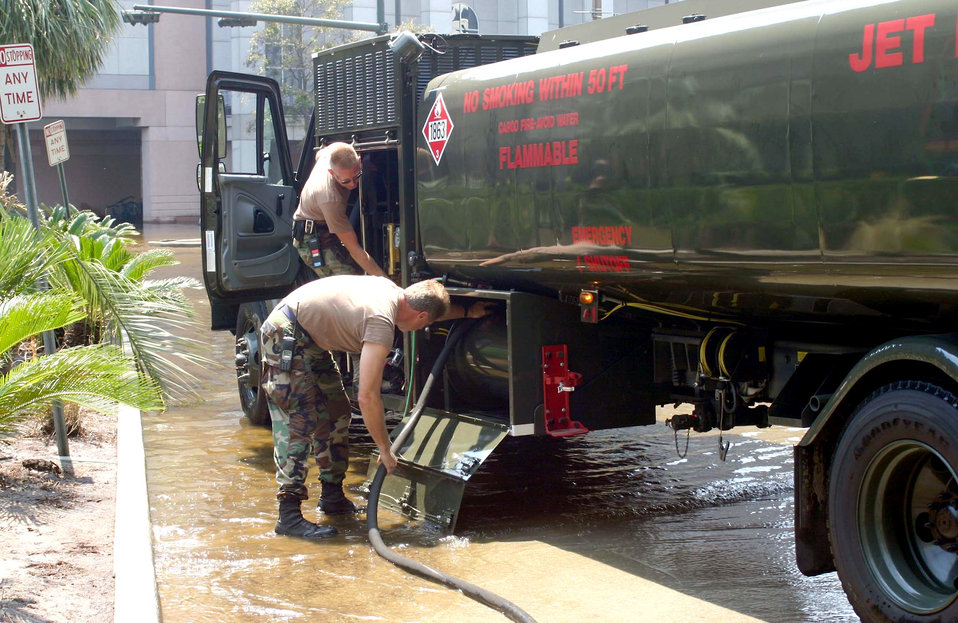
Fuels team assists in hurricane recovery efforts

NEW ORLEANS -- Staff Sgt. Tim Childress (back) helps Master Sgt. Steve Wilgus prepare an R-11 jet fuel truck for a mission here. A fuels team from Barksdale Air Force Base, La., deployed here to assist with refueling operations in the city, to include refueling generators and stranded vehicles. Sergeant Childress is assigned to the 2nd Logistics Readiness Squadron at Barksdale, and Sergeant Wilgus is with the Louisiana Air National Guard.